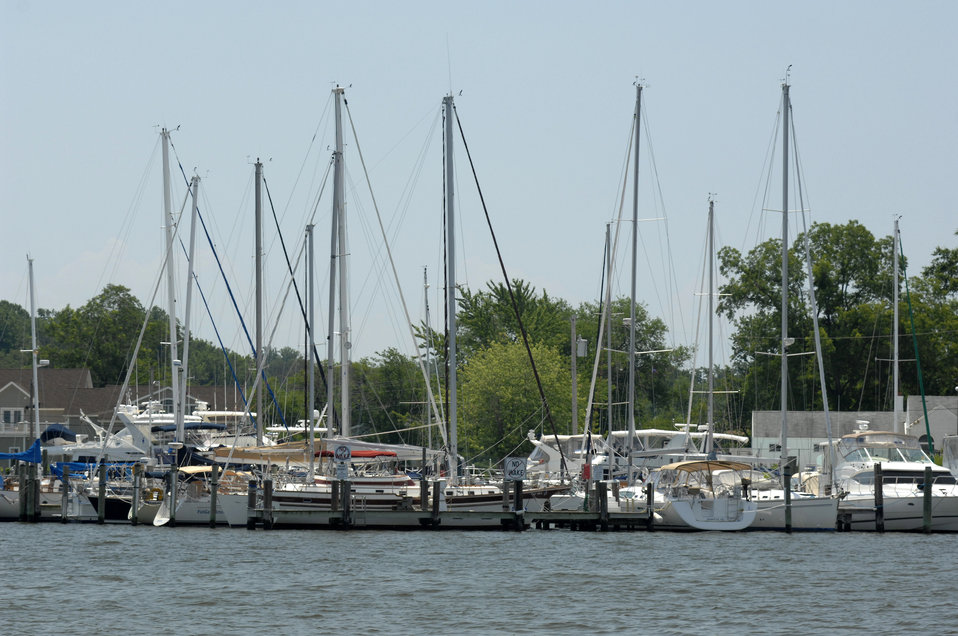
Various boats and sailing craft are tied up to the pier in the Chesapeake Bay, Maryland on July 14, 2008.